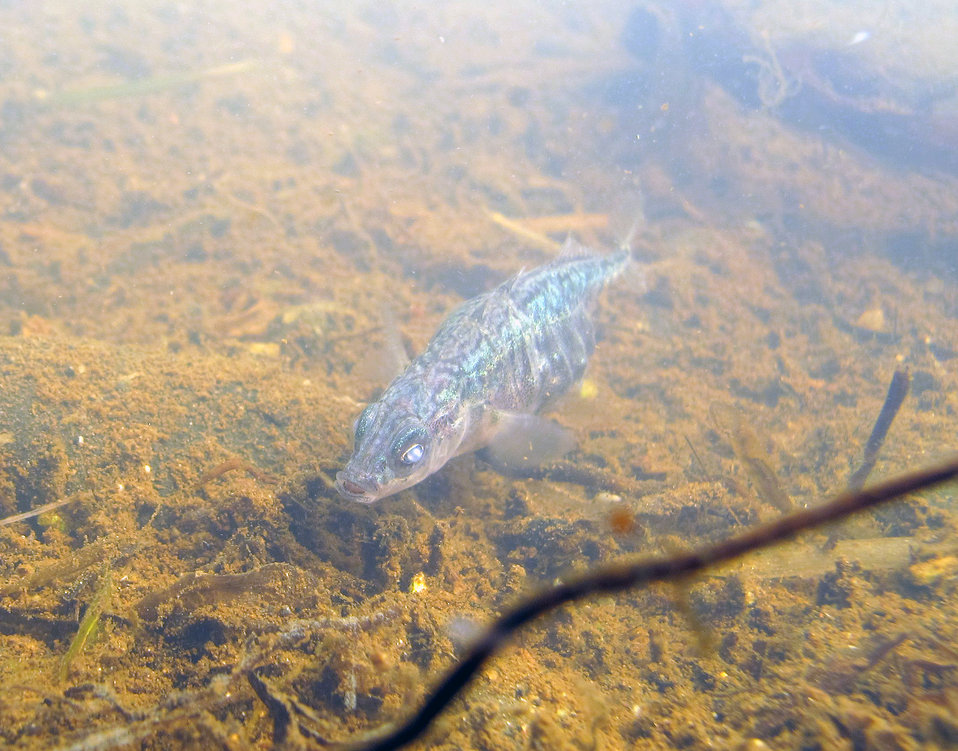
3 spine stickleback female

Beluga Lake in Homer, AK.